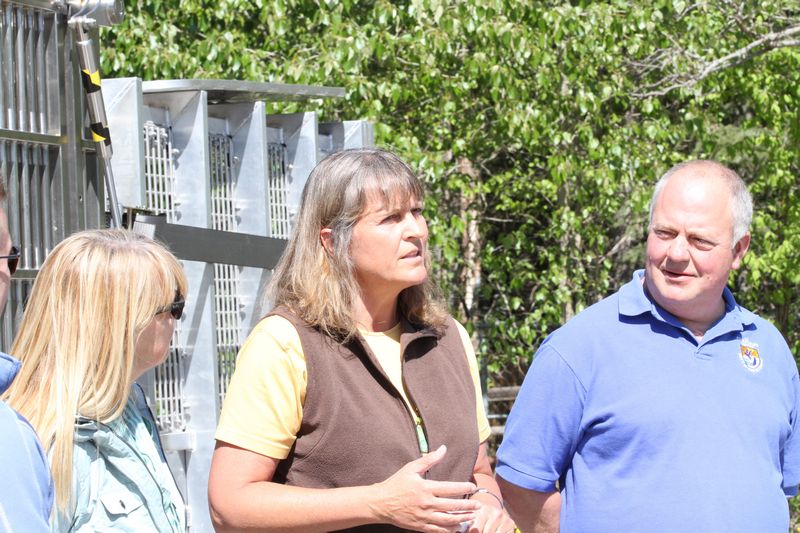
Press Conference on the polar bear holding module. USFWS/Rose Primmer